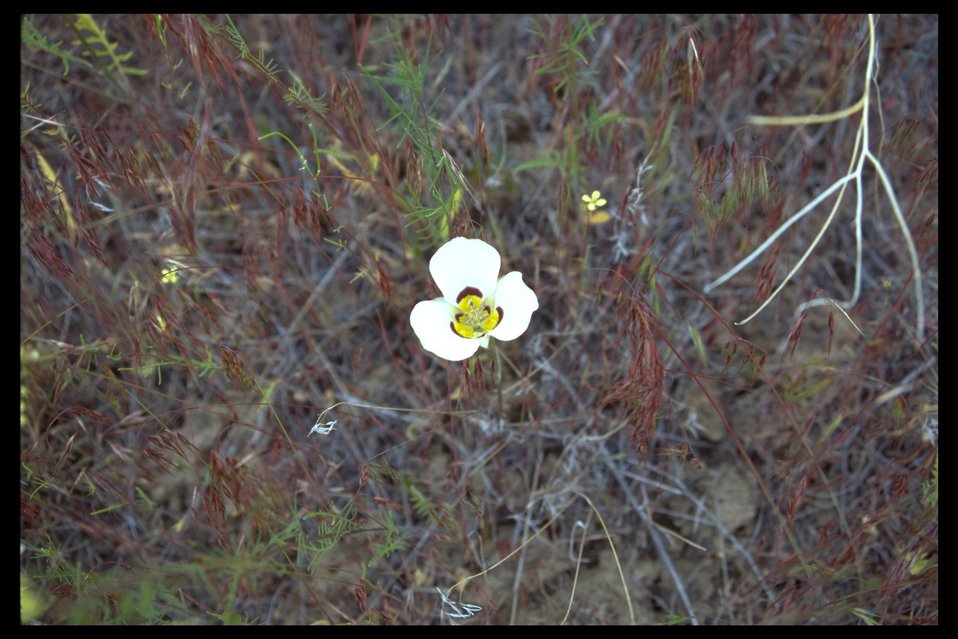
A Sego Lily in Alvord Peak WSA. (WSA 2-83)